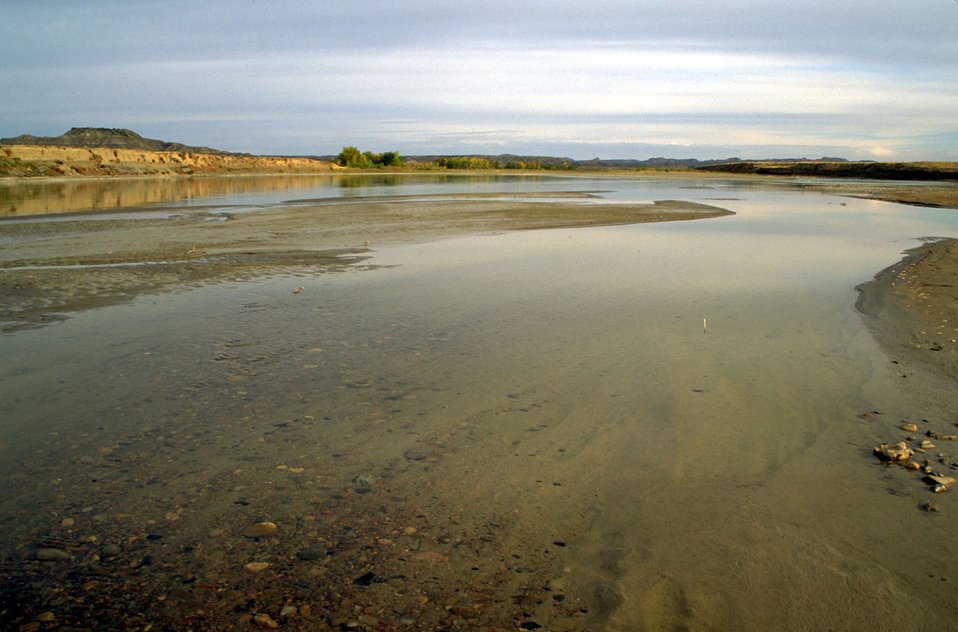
Yellowstone River